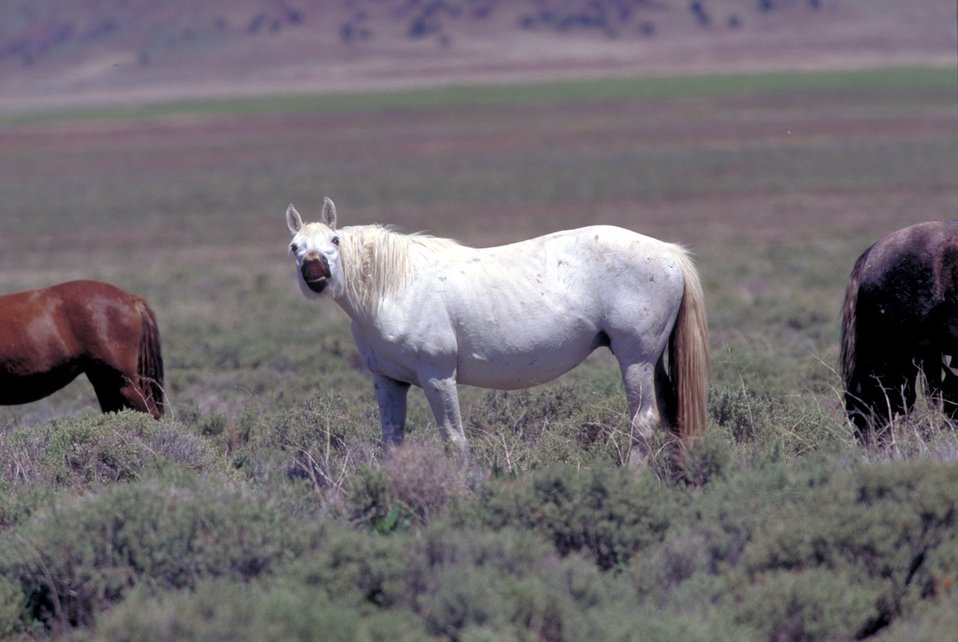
Onaqui Herd near Dugway, Utah.